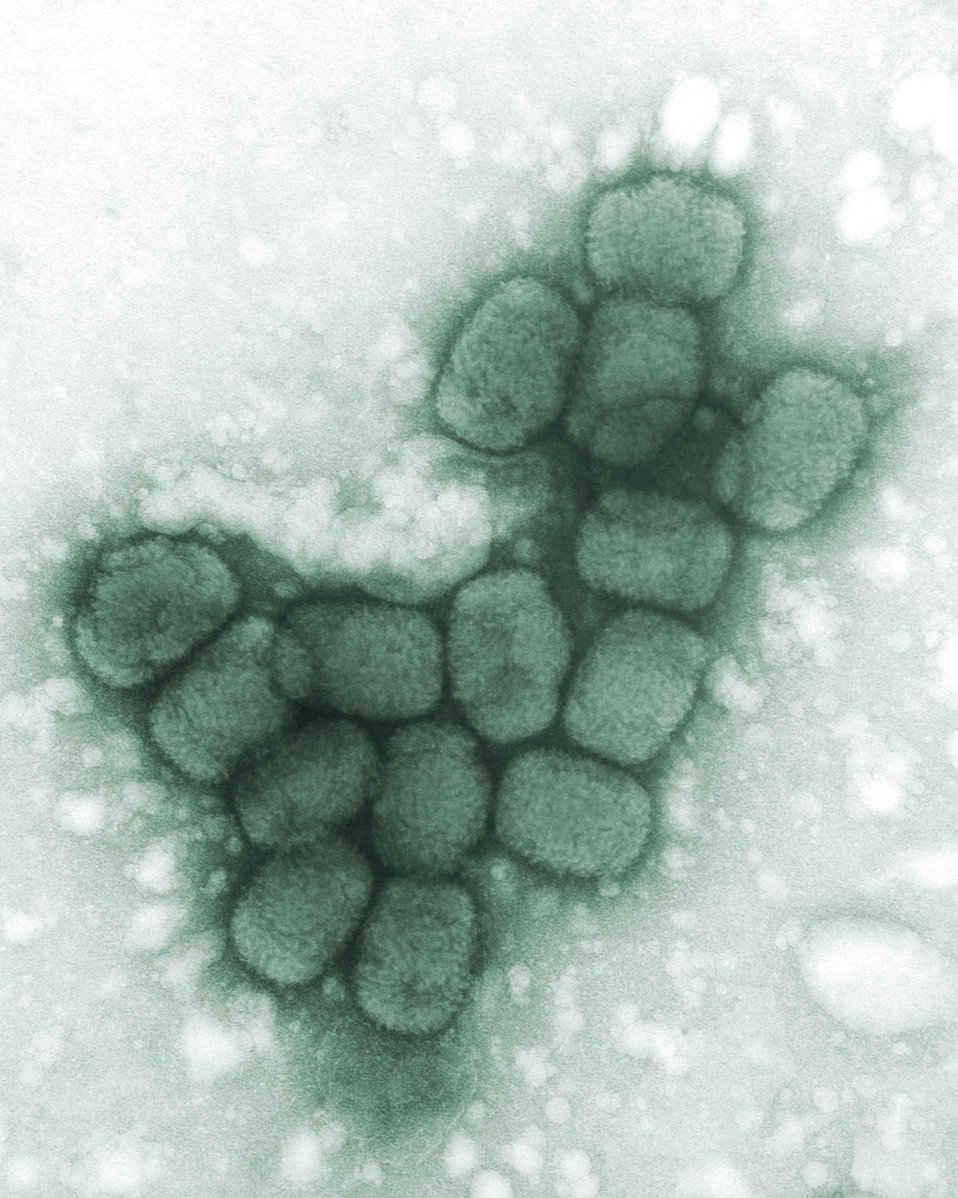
A transmission electron micrograph of smallpox viruses using a negative stain technique. See PHIL 2294 for a black and white version of this colorized image.